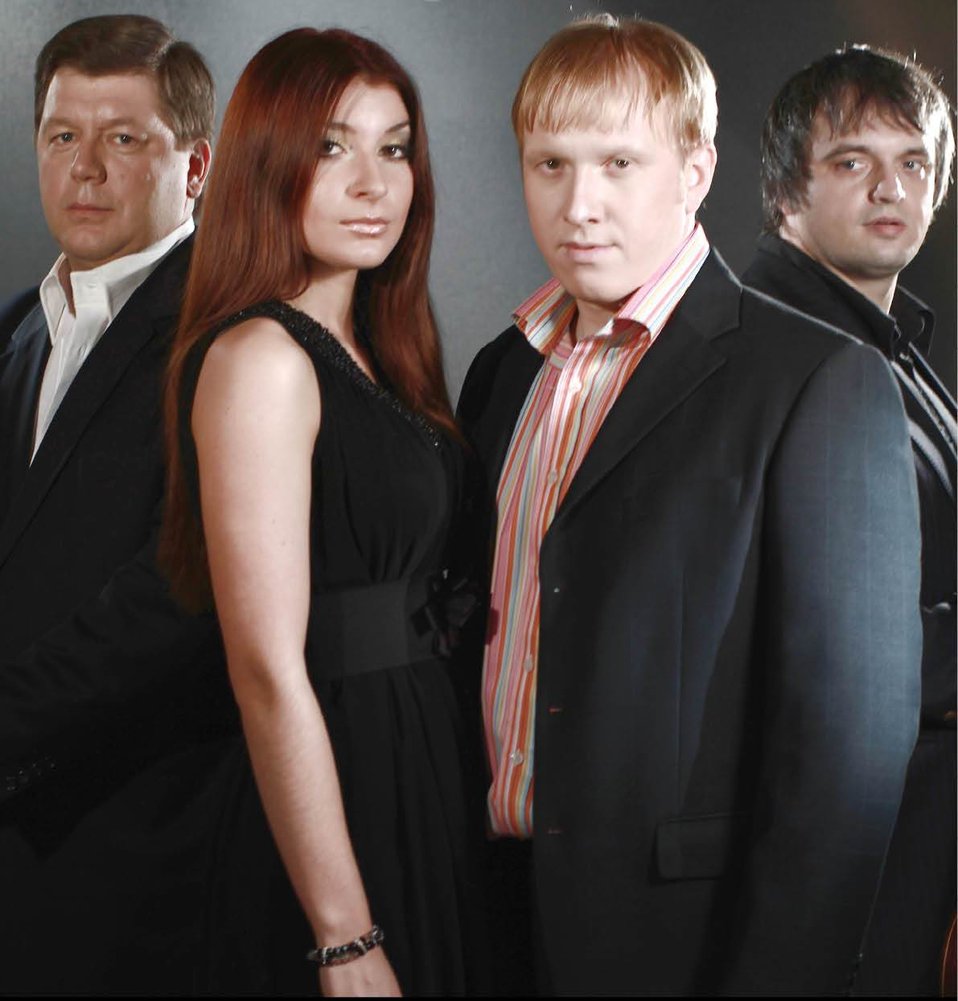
Музыкальный коллектив «Рядовой Дарин»